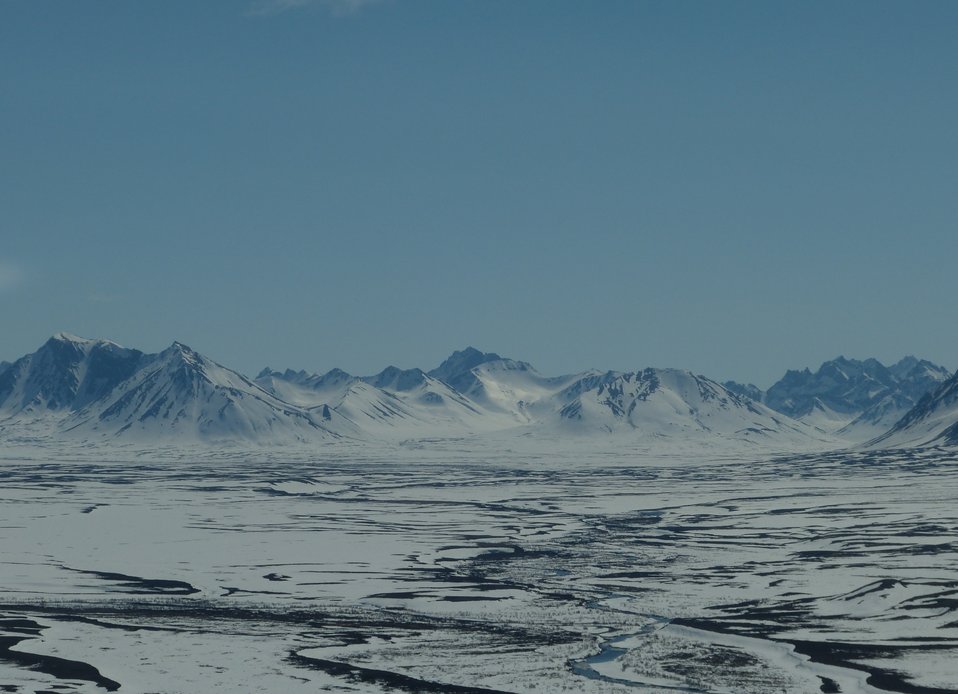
Kilbuck Mountains May2013 KSowl

Cliff-nesting raptor survey, Kilbuck Mountains, Yukon Delta National Wildlife Refuge

Photo credit: Kristine Sowl,
USFWS, YDNWR